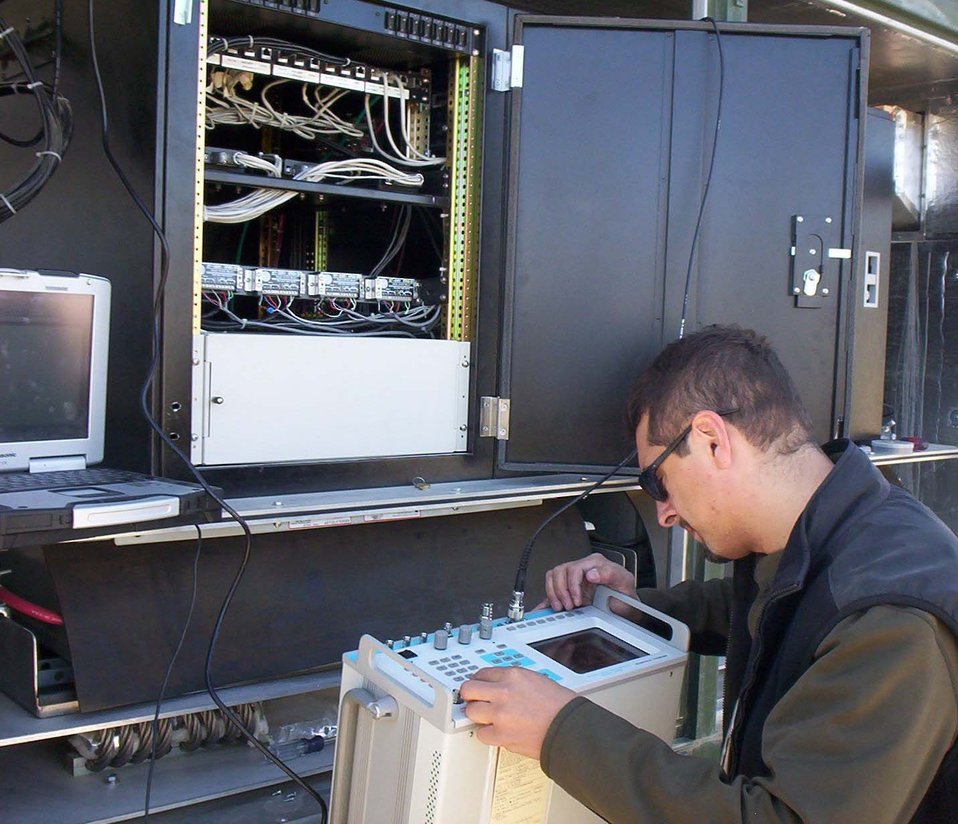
Radio team connects air to ground

BAGRAM AIR BASE, Afghanistan - Gus Carvajal, a 455th Expeditionary Mission Support Squadron Joint Radio Relay contractor, tests radio equipment on a JR2 at a remote site in Afghanistan. The system has similar capabilities to the E-3 Sentry airborne warning and control system.